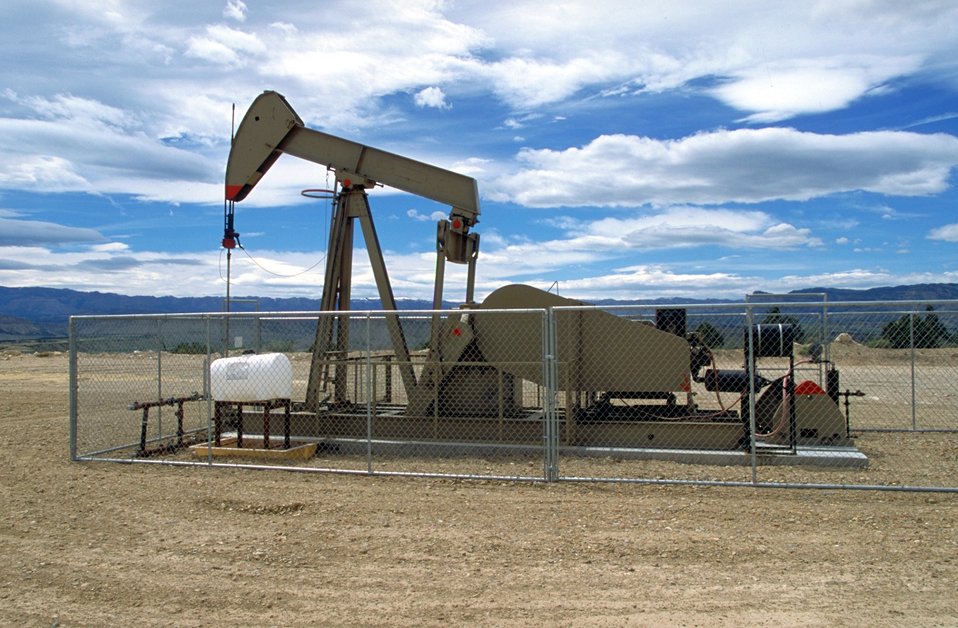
Pump unit producing coal bed methane near Price, Utah.